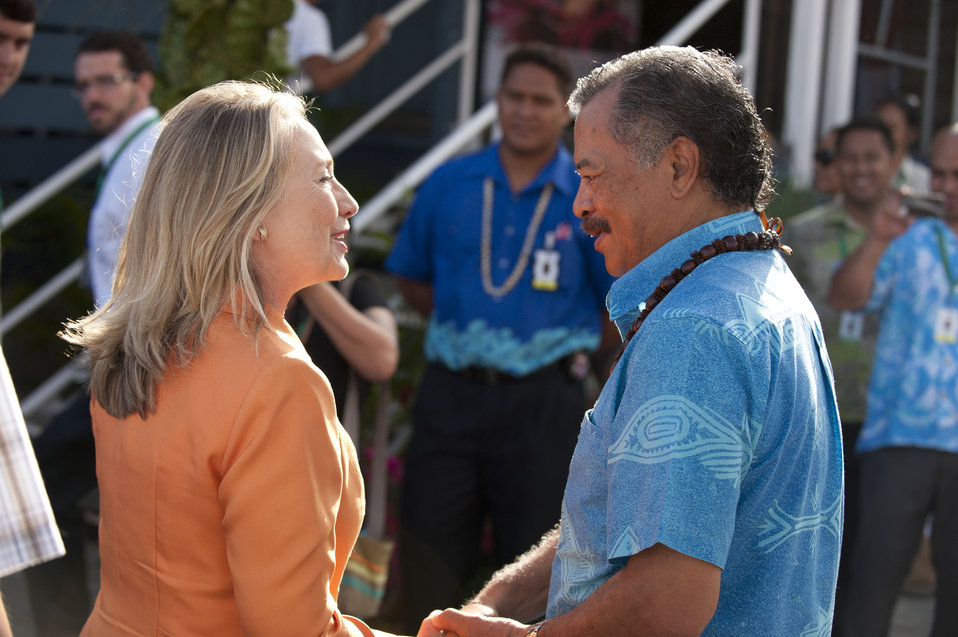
Secretary Clinton With Prime Minister Puna

U.S. Secretary of State Hillary Rodham Clinton speaks with Prime Minister Henry Puna at the Pacific Islands Forum in the Cook Islands, August 31, 2012.